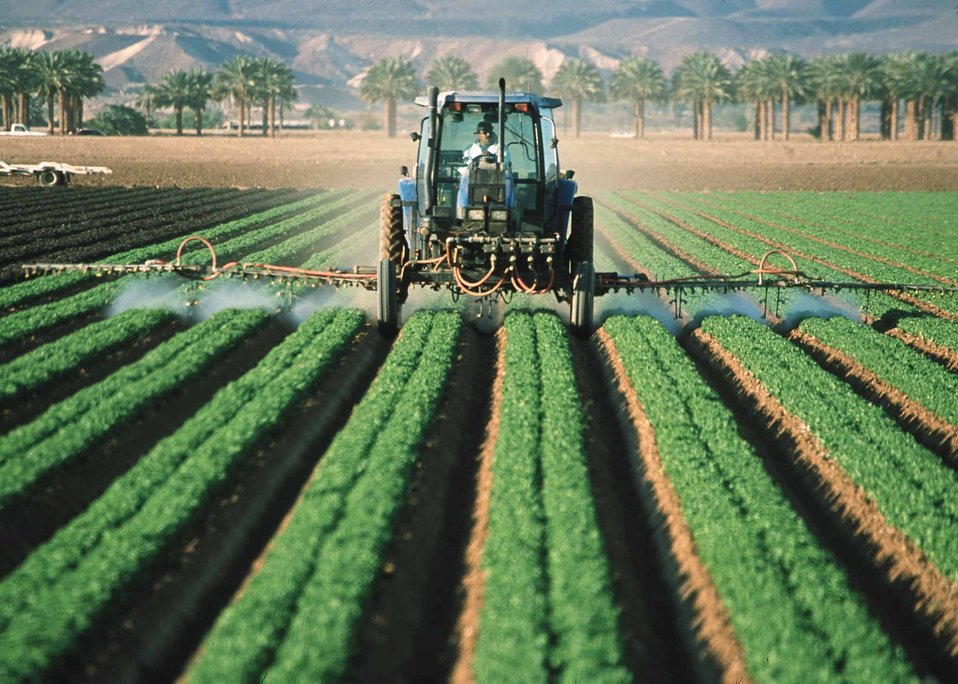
Pesticide application on leaf lettuce in Yuma, Az.